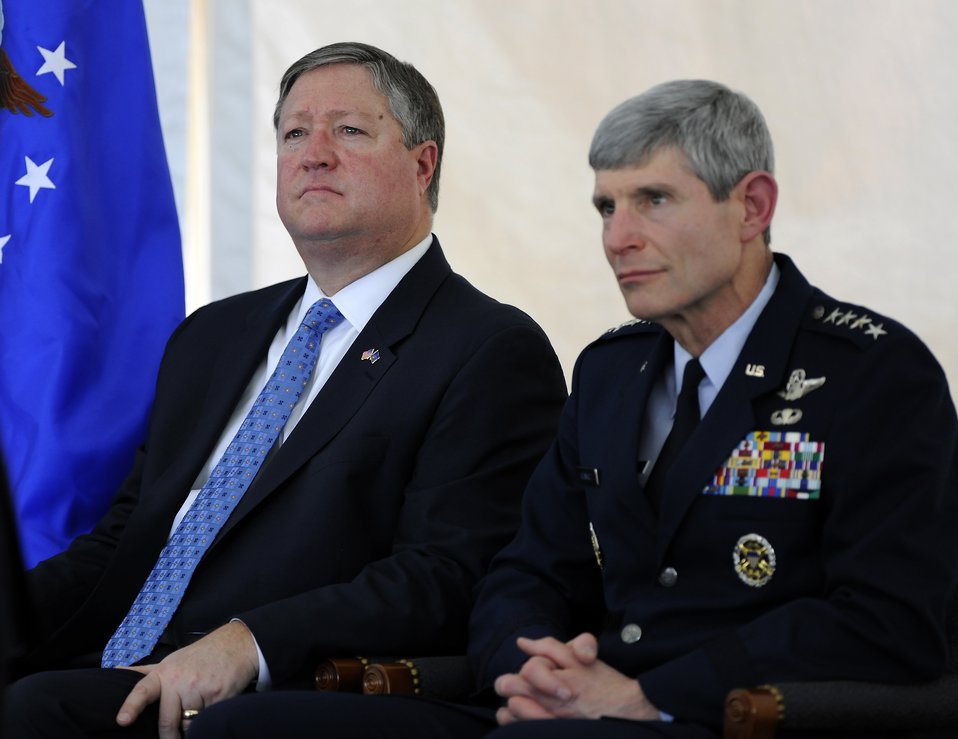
Fisher House Groundbreaking at Dover

Secretary of the Air Force Michael B. Donley and Air Force Chief of Staff Gen. Norton A. Schwartz listen to Kenneth Fisher, chairman of the board of trustees for the Fisher House Foundation, during the groundbreaking ceremony for the future Fisher House at Dover Air Force Base, Del., May 1. The three leaders co-hosted the ceremony. When construction is finished, this Fisher House will be unique in that it will provide hospice services to family members awaiting the return of their fallen servicemembers from overseas.